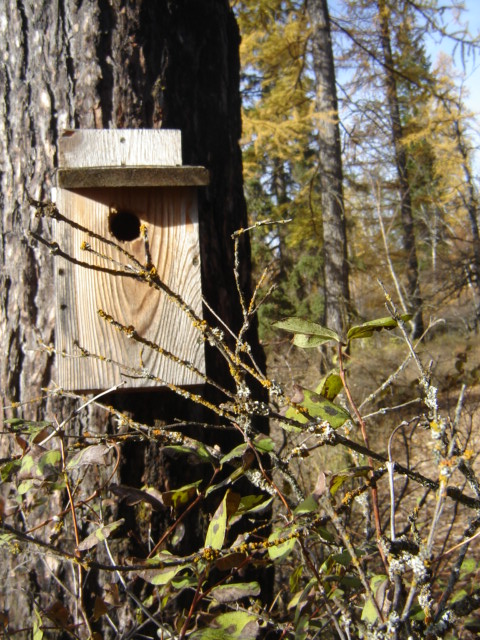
Blue Bird House on Nature Trail at the Creston National Fish Hatchery

Creston National Fish Hatchery's Nature Trail has thirteen signs along the trail that correspond to a brochure at the trailheads.

For Flathead Valley educators and families, this nature trail helps to increase knowledge of the natural world around us. Informational signs include: Wildflowers not Weeds, Why do Hacheries Raise Fish, Deer Trails - Natures's Highways, Habitats-Aquatic-Forest-Riparian, Protecting Water Quality, Pollinators, Birds - Can you Hear Them Sing?, Historical Land - Jessup, Leave no Trace, Do Insects Bug You?, and the Class Room by the Creek (amphitheater).